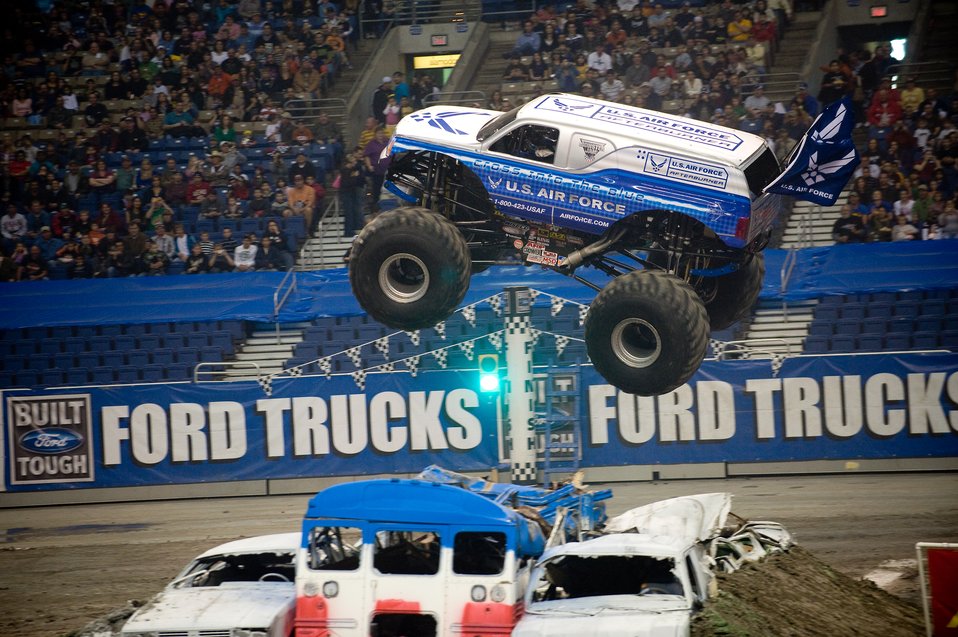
AF flies high at Monster Jam

Damon Bradshaw, in the Air Force Afterburner monster truck, soars through the air Jan. 11 during the Monster Jam at the Alamodome in San Antonio. Mr. Bradshaw took second with fast lap times and freestyle performances that had the crowd of approximately 45,000 up and cheering. Afterburner's 540 cubic-inch Merlin supercharged racing V-8 engine churns out 1,425 horsepower. Mr. Bradshaw, in his 3rd season, demonstrated that he had mastered the application of power by launching the 10,000-lb vehicle more than 40 feet in the air, thrilling the crowd. Afterburner is equipped with 66